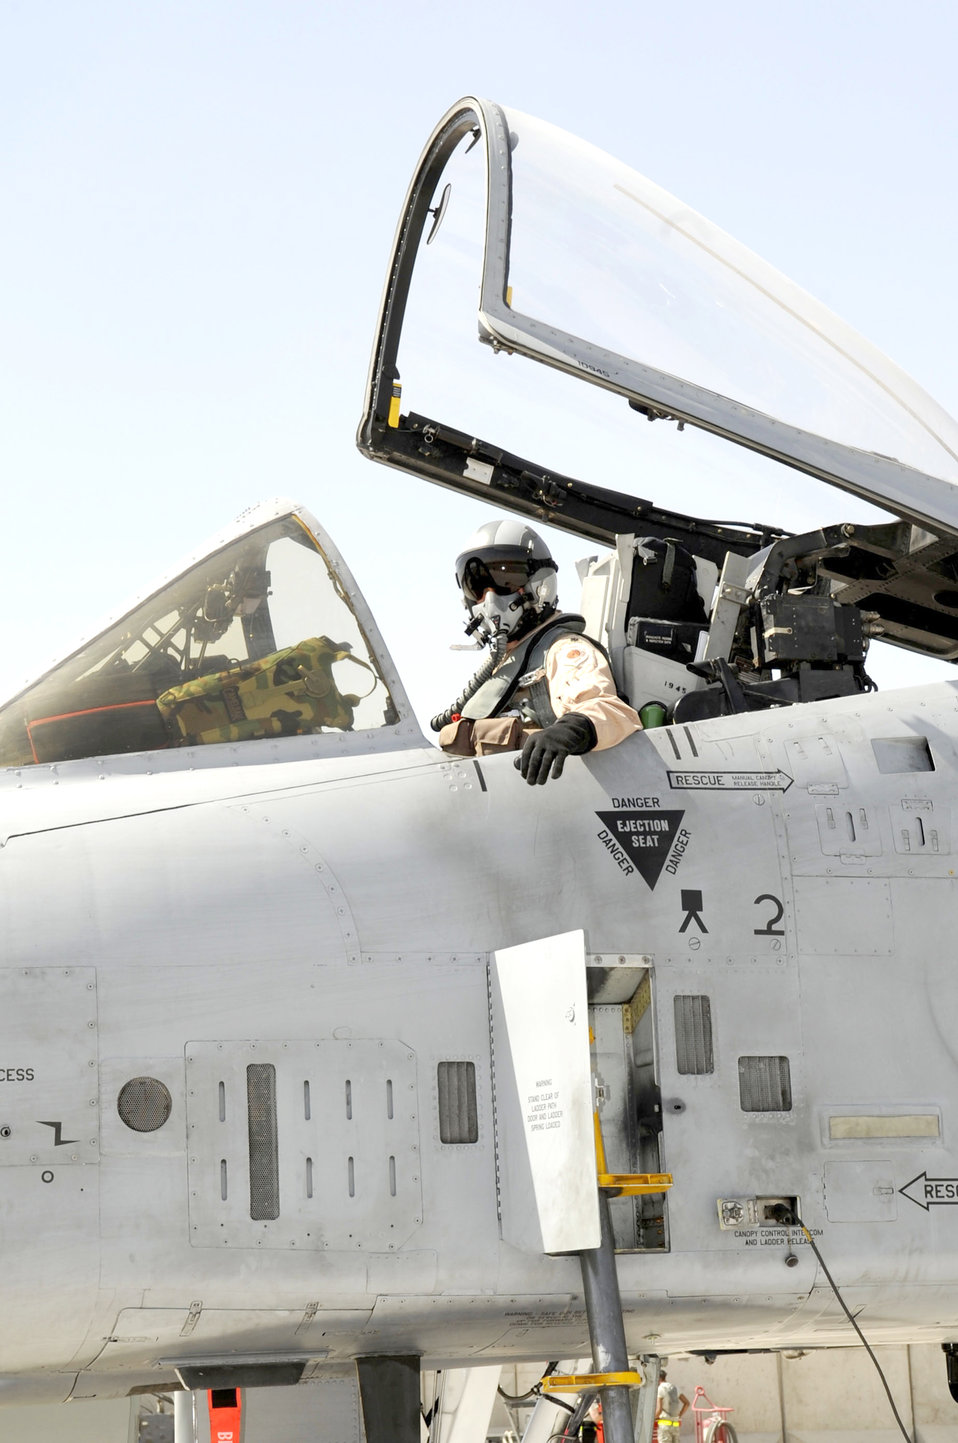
A-10 Thunderbolt II post-flight check

Lt. Col. Ron Stuewe waits in the cockpit for the crew chiefs to do their post-flight checks on the A-10 Thunderbolt II upon landing May 11, 2010, at Kandahar Airfield, Afghanistan. Colonel Stuewe is the 81st Expeditionary Fighter Squadron commander and deployed from Spangdahlem Air Base, Germany.